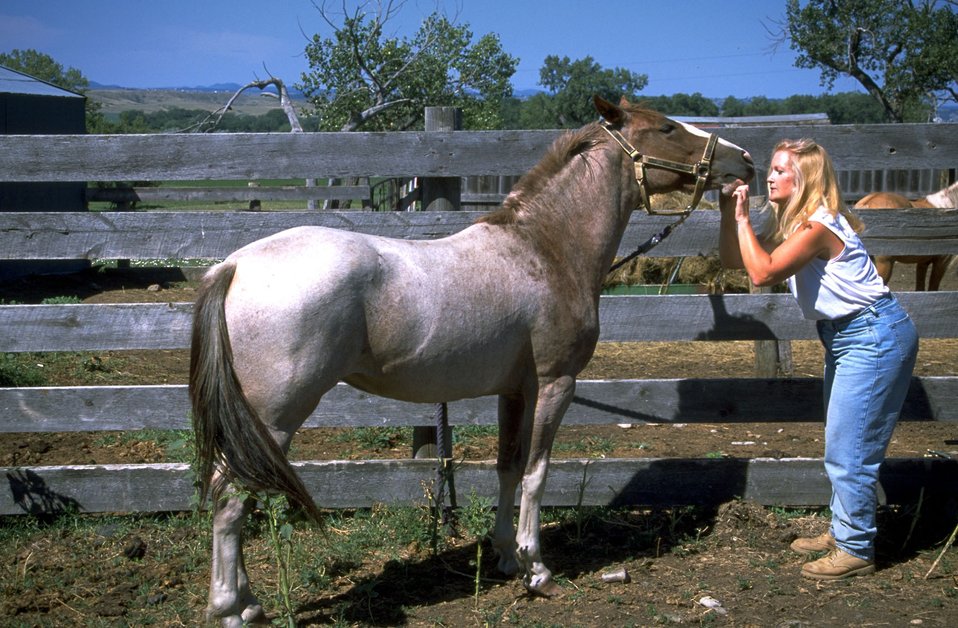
Young girl with adopted wild horse